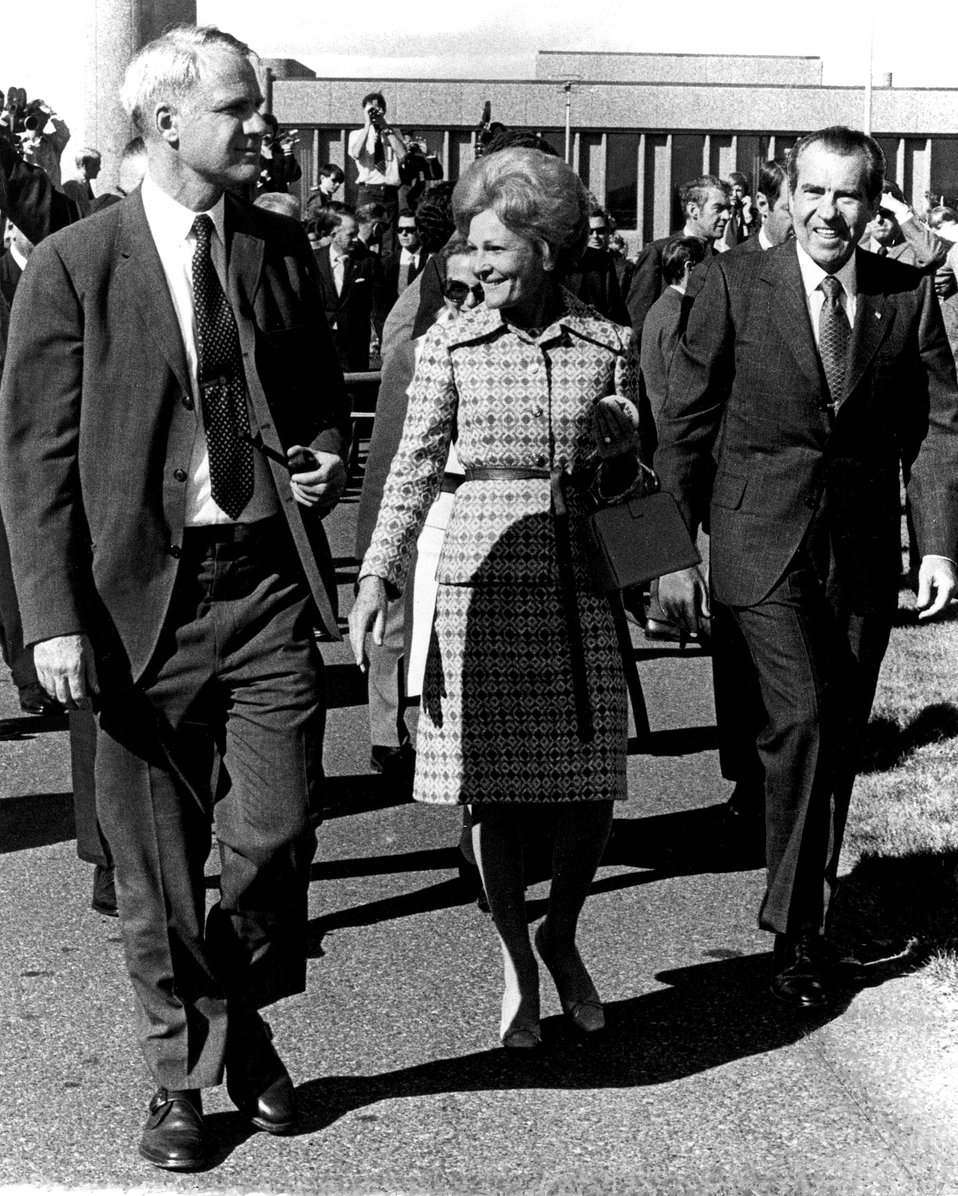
The President and the First Lady, together with Chairman James R. Schlesinger, visit the U.S. Atomic Energy Commission's Hanford site in Washington.